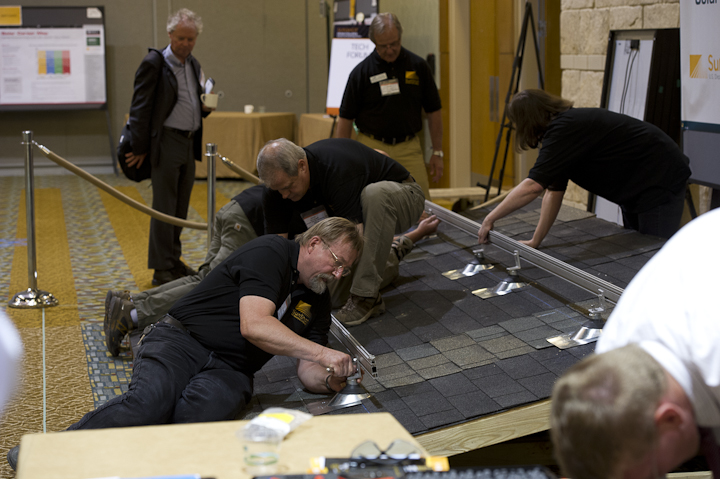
SunShot Summit

June 13, 2012- Students from Front Range Community College work on an instruction exhibit at the Technology Forum at the SunShot Grand Challenge Summit and Technology Forum in Denver, Colorado.